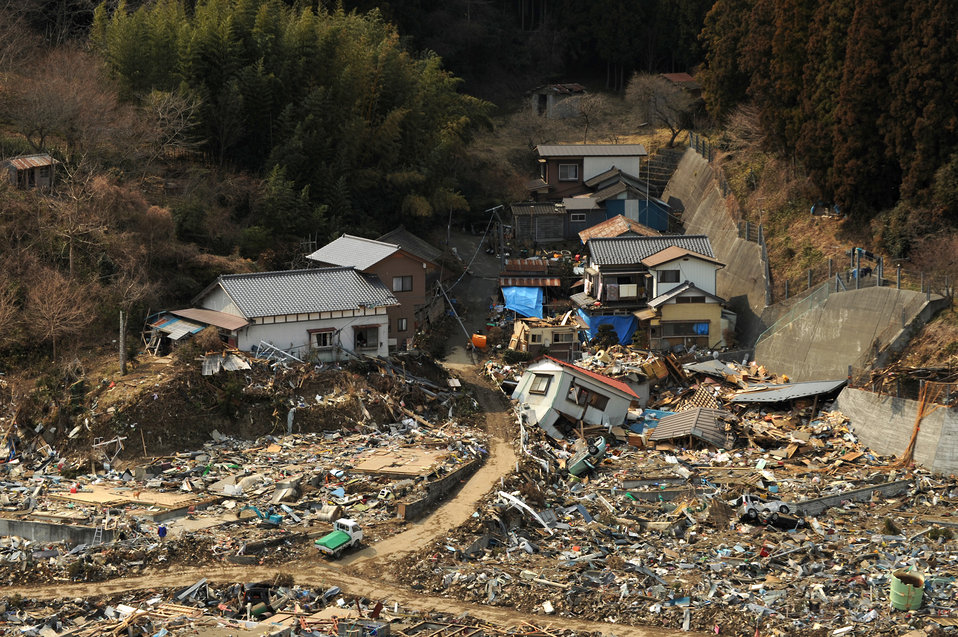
Rescue team mission

Rescue team members in an HH-60 Pave Hawk conduct search operations over Japan, March 25, 2011, in support of Operation Tomodachi.